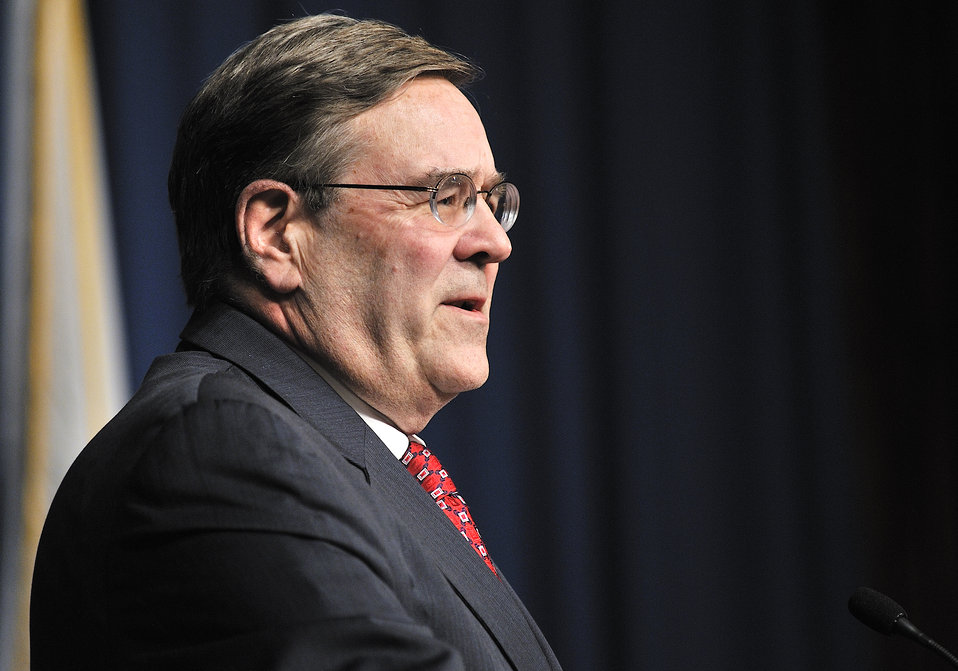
Martin Luther King Jr. Day Celebration at DOE headquarters.